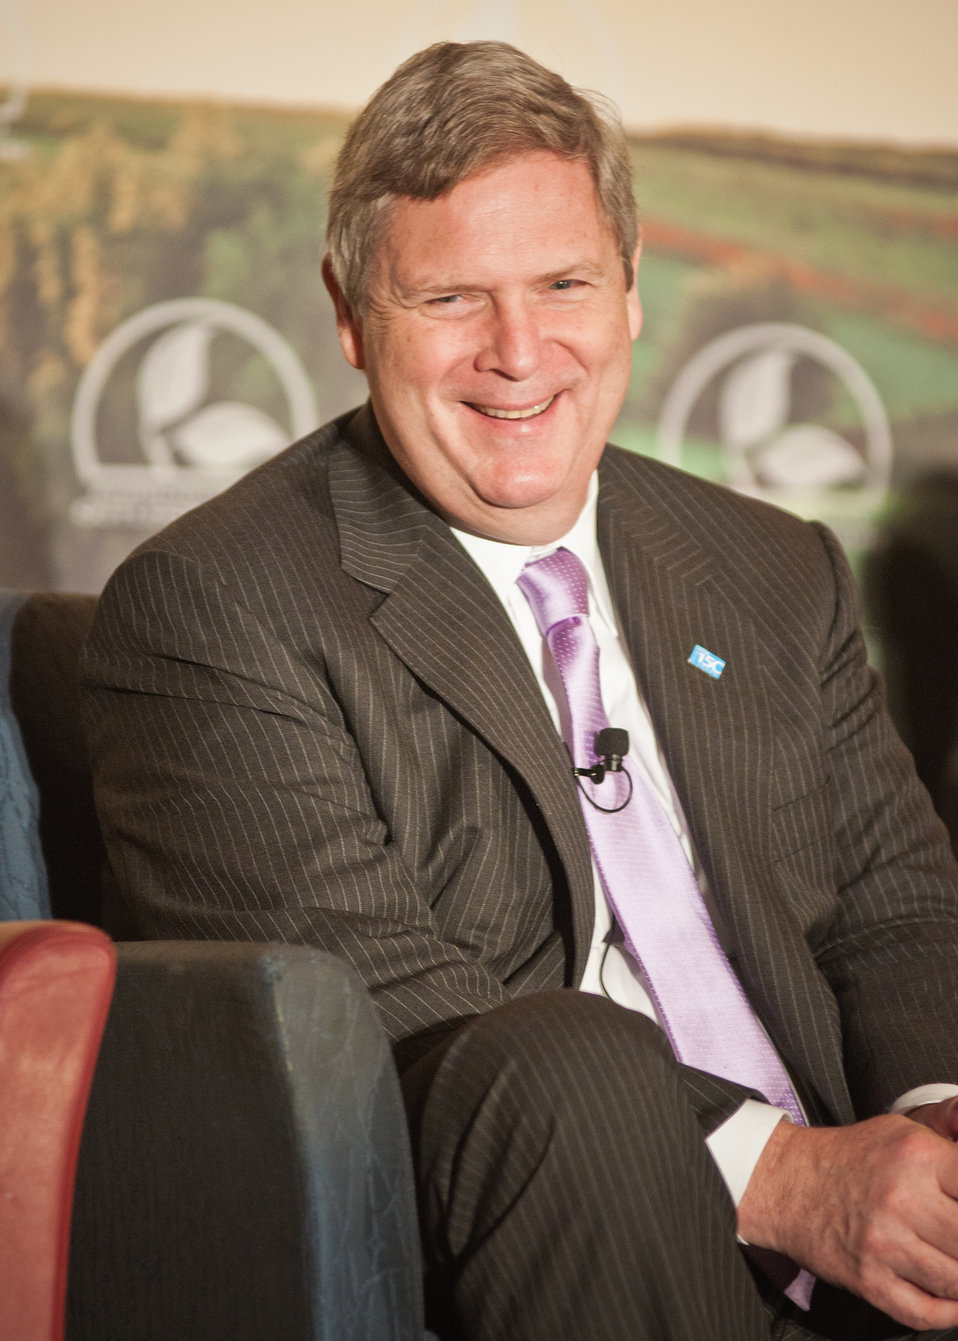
At the 2012 Agricultural Outlook Forum, “Moving Agriculture Forward” in Arlington, VA, held on Thursday, February 23, 2012, 7 former Secretaries of Agriculture sat on the plenary panel “Visions of the Future” hosted by current Agriculture Secretary Tom Vilsack. Secretary Vilsack smiles during the panel discussions.